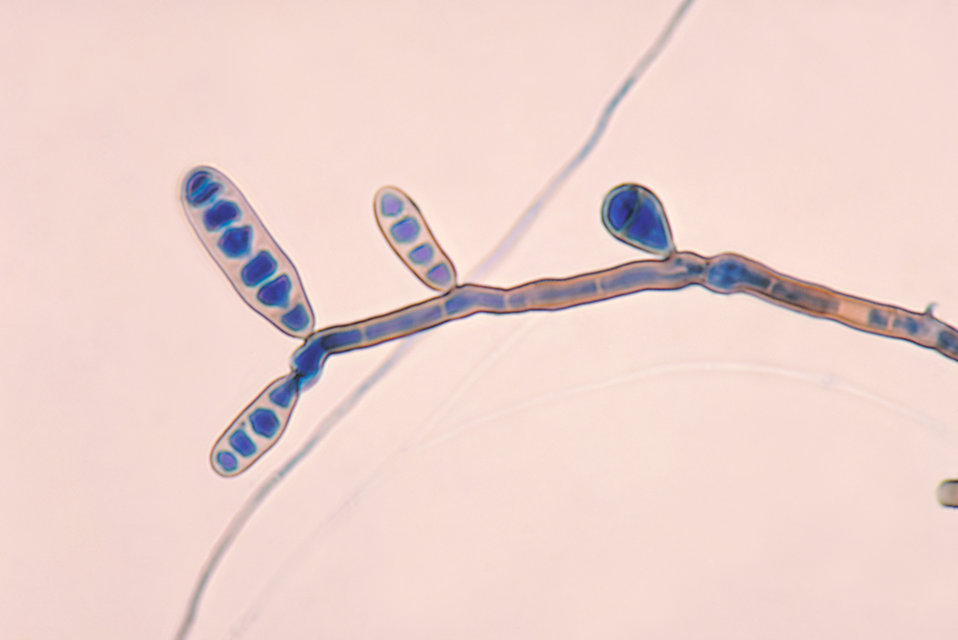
Note the fine branching tubes of the fungus Exserohilum rostratum, which is the cause of Phaeohyphomycosis.